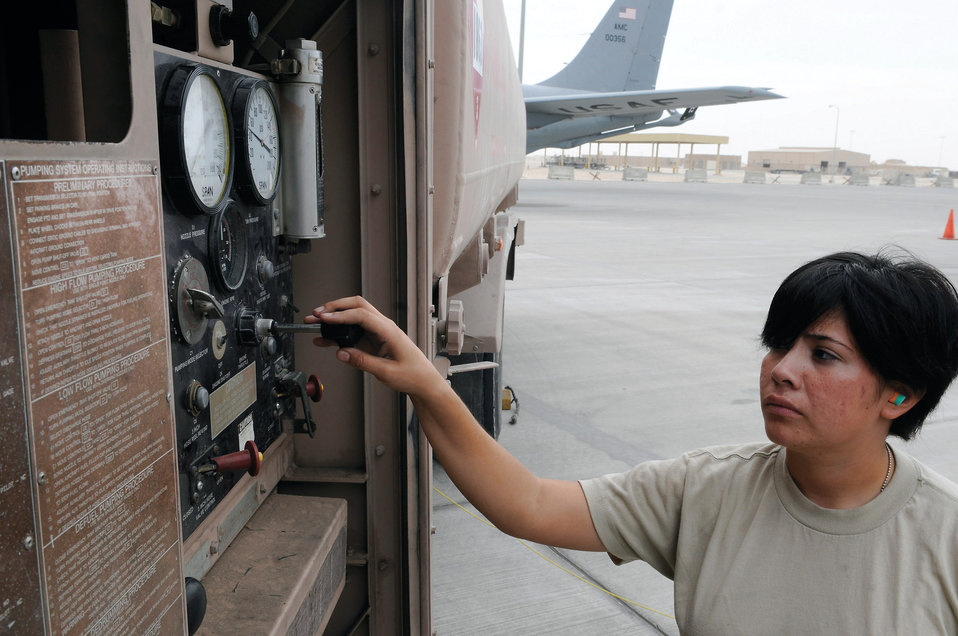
Airmen fuel the flight

Airman 1st Class Angelica Gonzalez slows down the flow of fuel at an air base in Southwest Asia. She carefully controls the speed of fuel leaving her fuel truck and entering a KC-135 Stratotanker. Depending on the mission the KC-135 can hold four or five fuel trucks worth of fuel. Airman Gonzalez is a fuels apprentice assigned to the 379th Expeditionary Logistics Readiness Squadron. She is a native of Scotts Bluff, Neb., and deployed from Kadena Air Base, Japan.